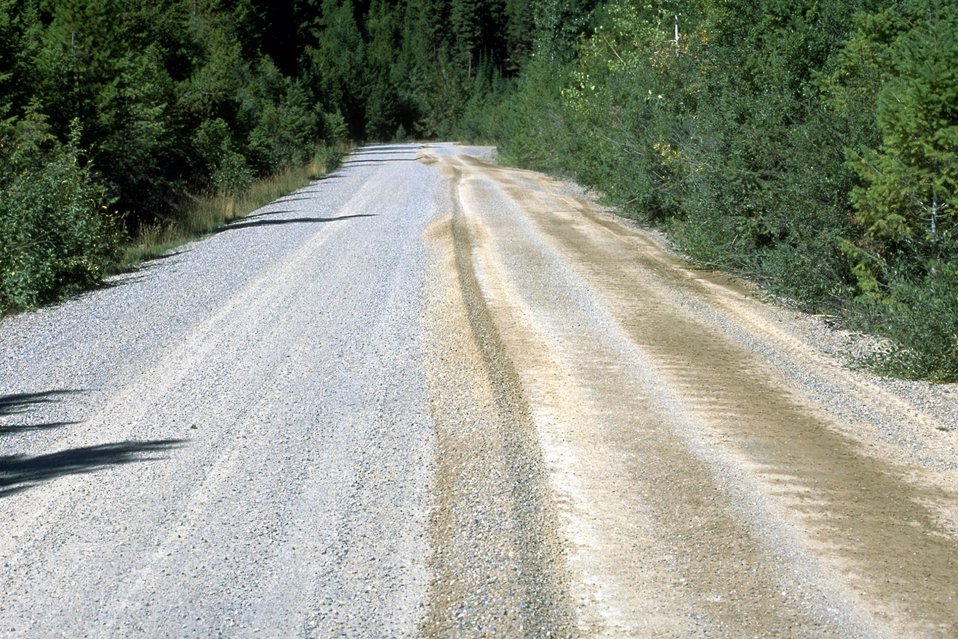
Garnet Back Country Byway--road maintenance work